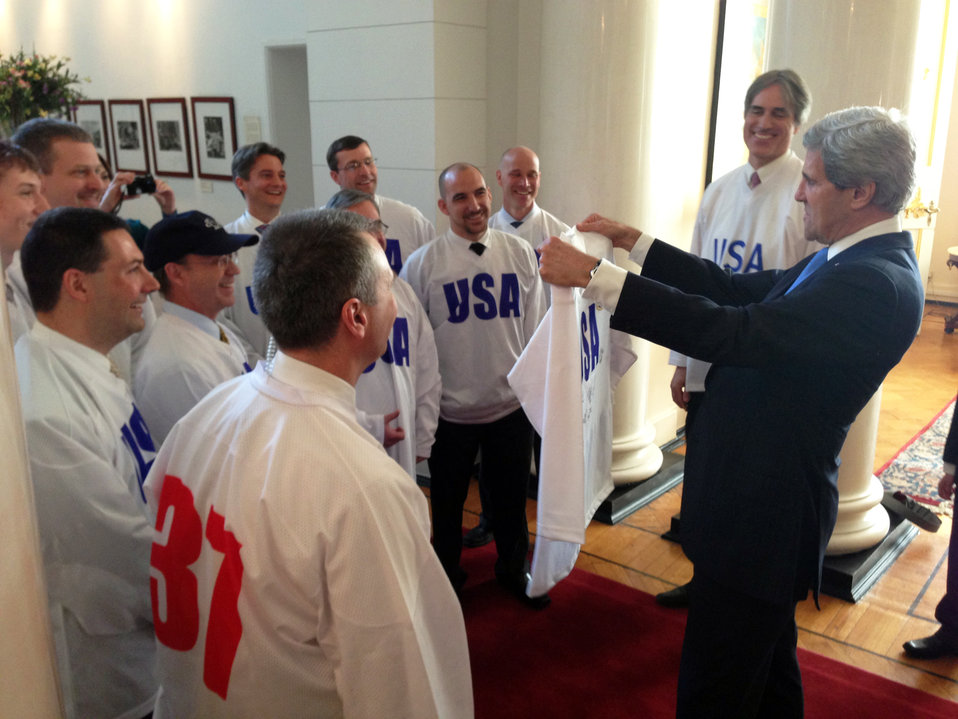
Secretary Kerry Admires His New Hockey Jersey

U.S. Secretary of State John Kerry admires the hockey jersey given to him by the the pickup hockey team at the U.S. Embassy in Moscow, Russia, on May 8, 2013.